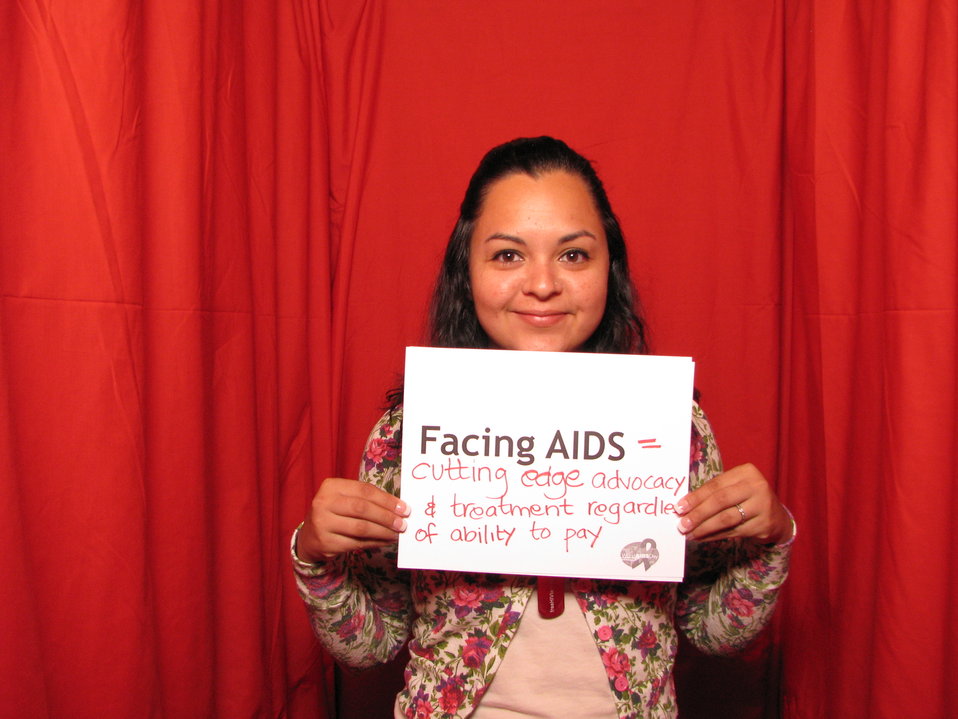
FACING AIDS = cutting edge advocacy and treatment regardless of ability to pay.

From the AIDS.gov photo booth at the U.S. Conference on AIDS, September 2010 (Orlando, FL).